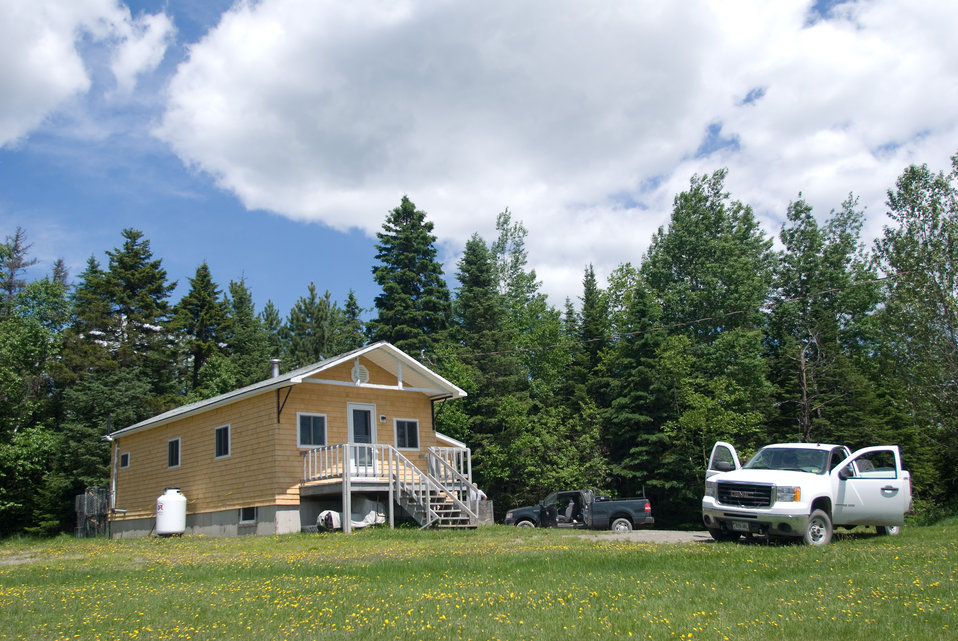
Base Camp

Located off of Clayton Lake, crews utilized a cabin rented from land owners as their base camp during multiple day studies.